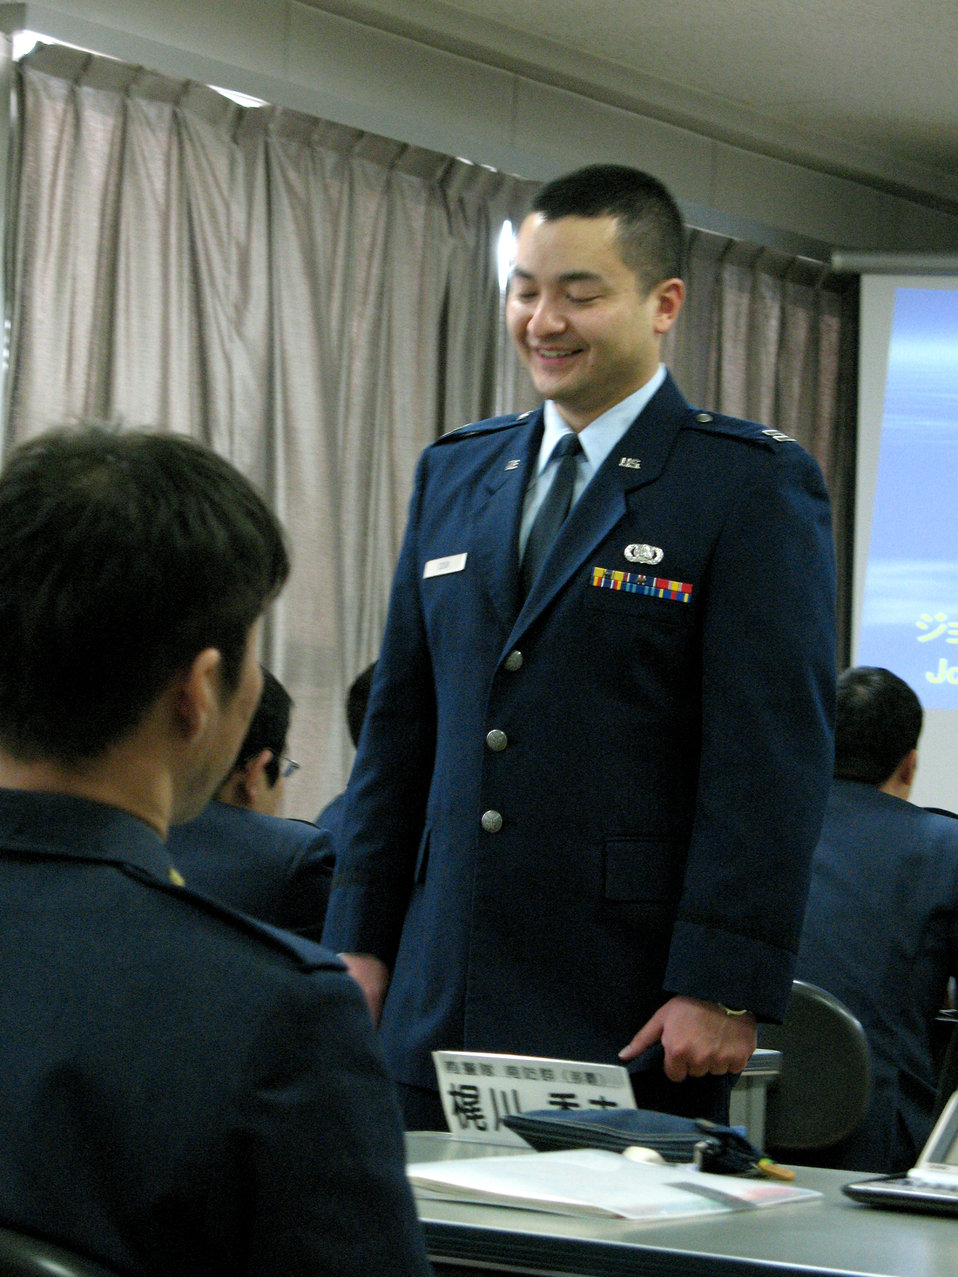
Captain shares language with Japanese airmen

Capt. Joseph Cook teaches English and offers an introduction to U.S. Air Force communication techniques to Japanes Air Self Defense Force officers and airmen Feb. 1 at Kumagaya Air Base in Japan. Captain Cook is the only American stationed here as part of the Japanese Personnel Exchange Program.